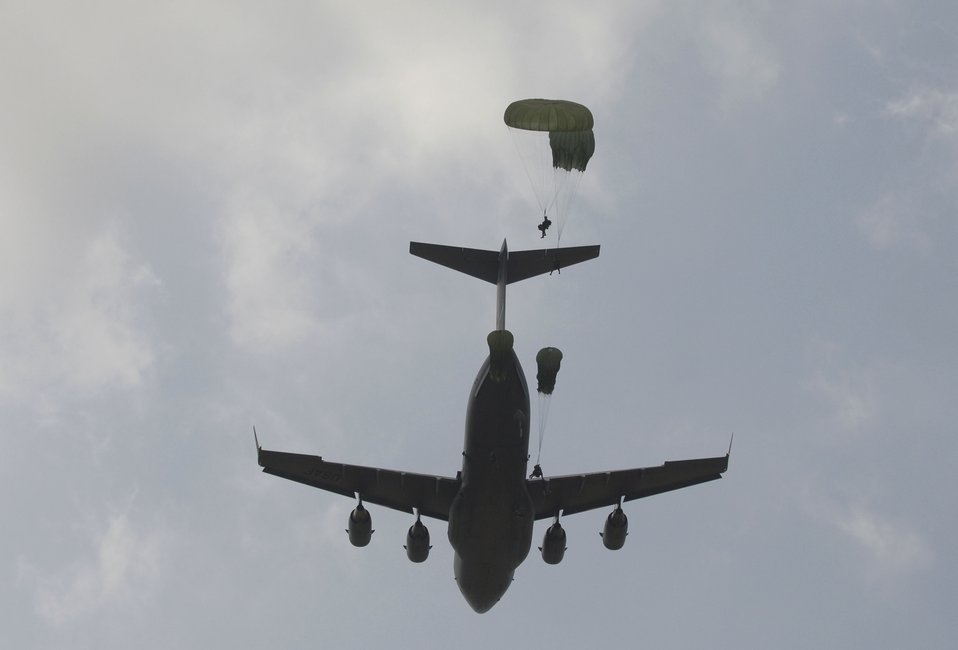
Testing joint capabilities

Army Soldiers jump out of a C-17 Globemaster III Aug. 21 during a joint forcible entry exercise with the Air Force over the East Coast. The JFEX training exercise is designed to validate combat readiness, leadership, planning staff, aircrews and ground forces in joint airborne warfighting capabilities through integrated scenario-based training operations. The Soldiers are with the 20th Engineer Battalion at Fort Bragg, N.C.